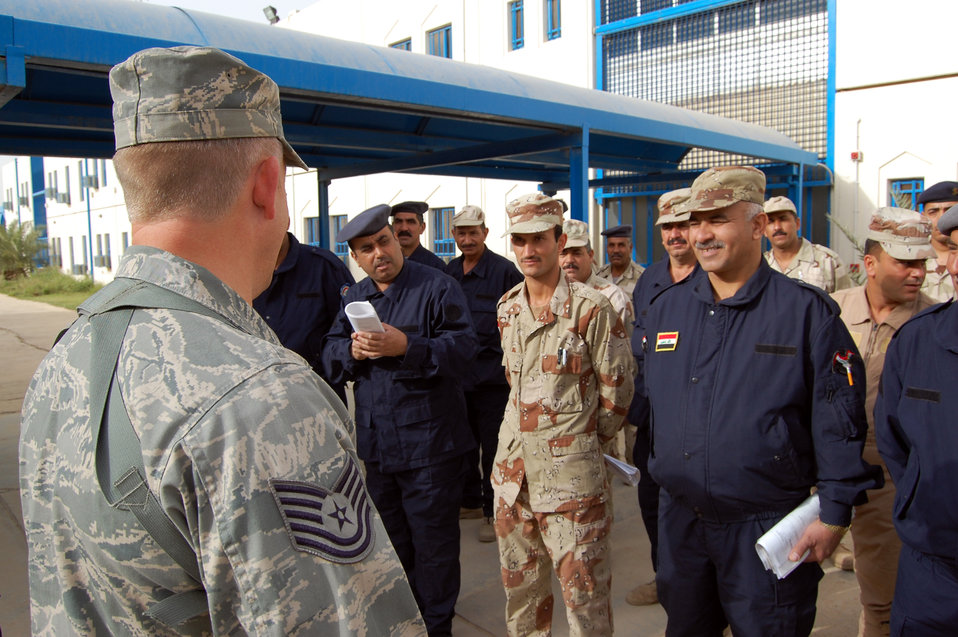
Air Force instructors empower Iraqi warrant officers to lead

Tech. Sgt. Rick Dunaway briefs students before they take their final exam March 28 at Camp Taji, Iraq. Twenty-nine Iraqi warrant officers completed the seven-day course where they were taught lessons on discipline, leader influence, teamwork and development, ethics and values, Law of Armed Conflict and problem solving. Sergeant Dunaway is an 821st Expeditionary Training Squadron Iraqi warrant officer professional development course instructor. He is deployed from Maxwell-Gunter Air Force Base, Ala., and is a native of Russellville, Ark.